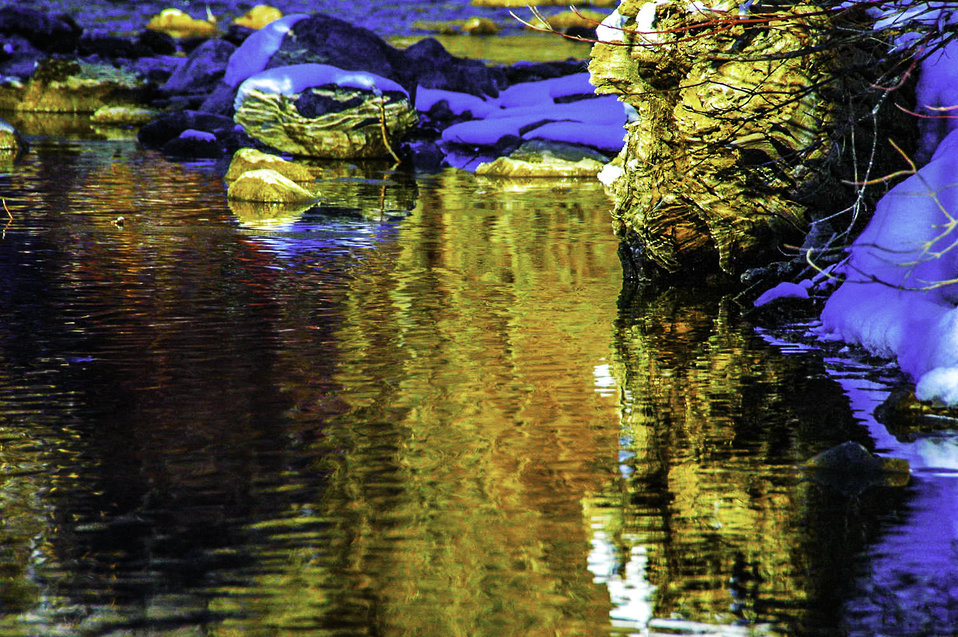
Bridger Creek

Quiet morning on Bridger Creek Photo Credit: Eli Cureton / USFWS